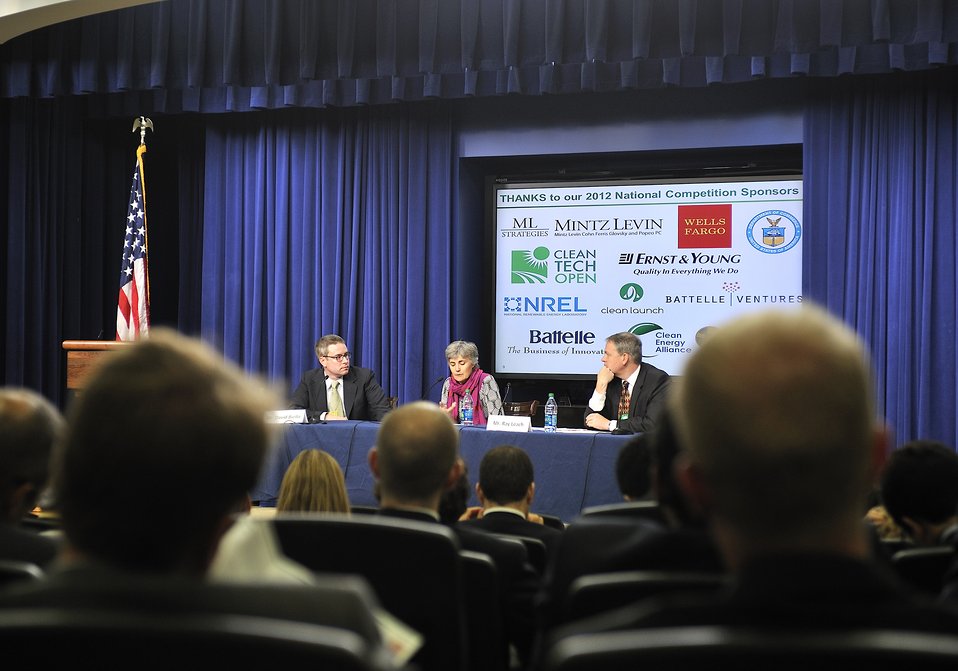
National Clean Energy Business Plan Competition

The National Clean Energy Business Plan Competition inspired nearly 300 university teams across the country to create new businesses to commercialize promising energy technologies developed at U.S. universities and the National Laboratories.